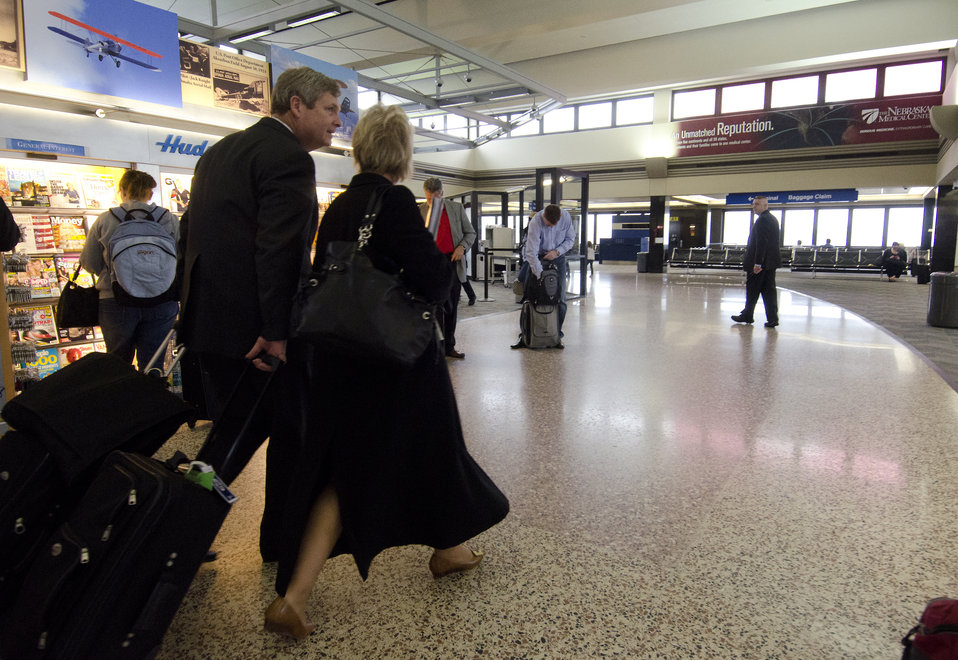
Agriculture Secretary Tom Vilsack and his wife Christie arrive at Eppley Airfield in Omaha, NE on Friday, Apr. 15, 2011. Secretary Vilsack was in Iowa to tour the BioProcess Algae facility at the Green Plains Renewable Energy (GPRE), Inc. and speak at the Grand Opening ceremony of Phase II. Phase II is a key component of the commercial scale photo bioreactors/harvesters. The operation is co-located within an GPRE’s ethanol factory and where BioProcess Algae technology is used to waste products; carbon dioxide, recycled heat and water to mass-produce algae. Algae from this facility are used for animal feeds, pharmaceutical and beauty products.